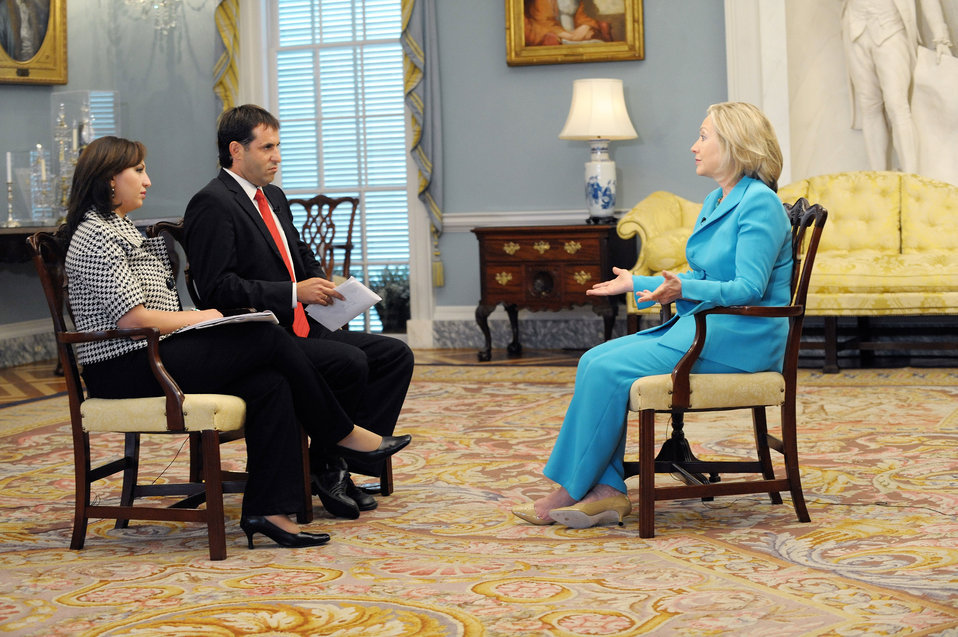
Secretary Clinton Participates in a Joint Interview With Udi Segal of Israeli Channel 2 and Amirah Hanania Rishmawi of Palestine TV

U.S. Secretary of State Hillary Rodham Clinton participates in a joint interview with Udi Segal of Israeli Channel 2 and Amirah Hanania Rishmawi of Palestine TV at the U.S. Department of State in Washington, D.C., on September 3, 2010.